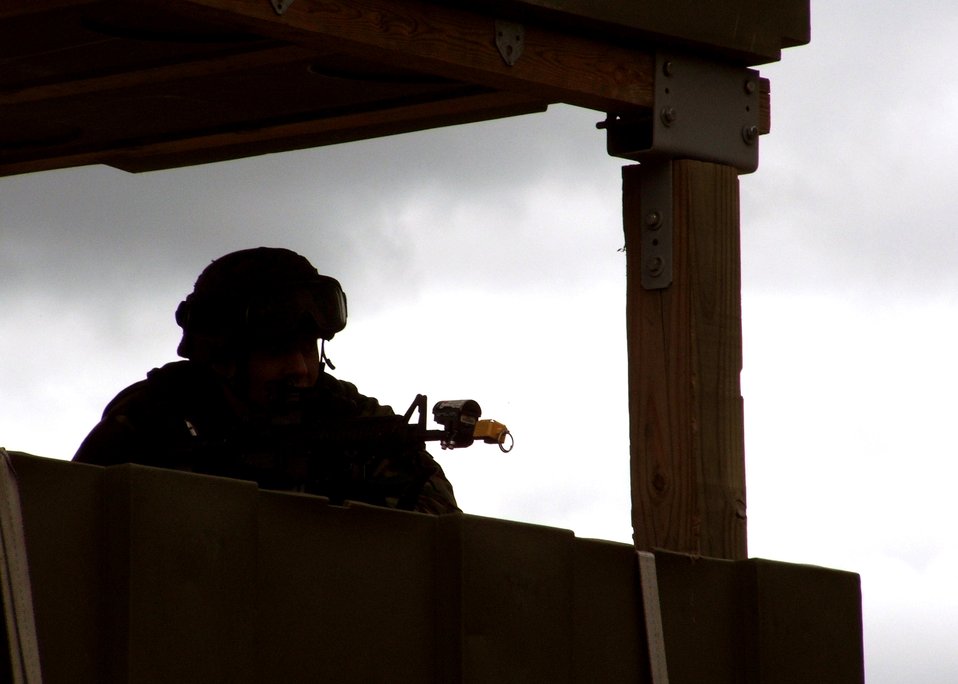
Eagle Flag

NAVAL AIR ENGINEERING STATION, LAKEHURST, N.J. (AFPN) -- An Air Force security forces troop keeps watch for intruders from a guard tower here. The Airman was on duty Oct. 24 during exercise Eagle Flag. He deployed here from the 613th Security Forces Squadron at Anderson Air Force Base, Guam, to support the 613th Contingency Response Group.